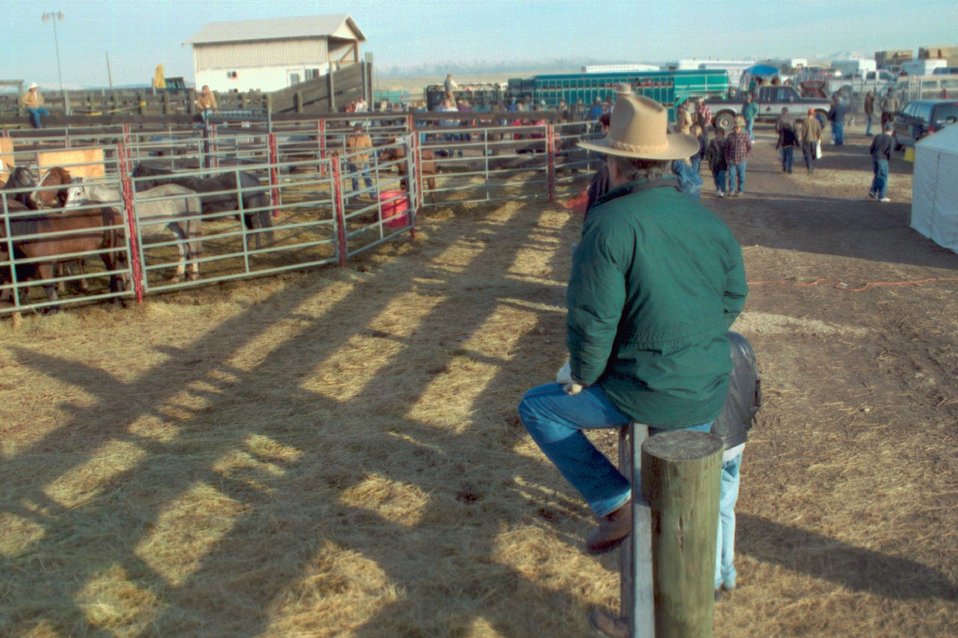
Wild Horse and Burro Adoption